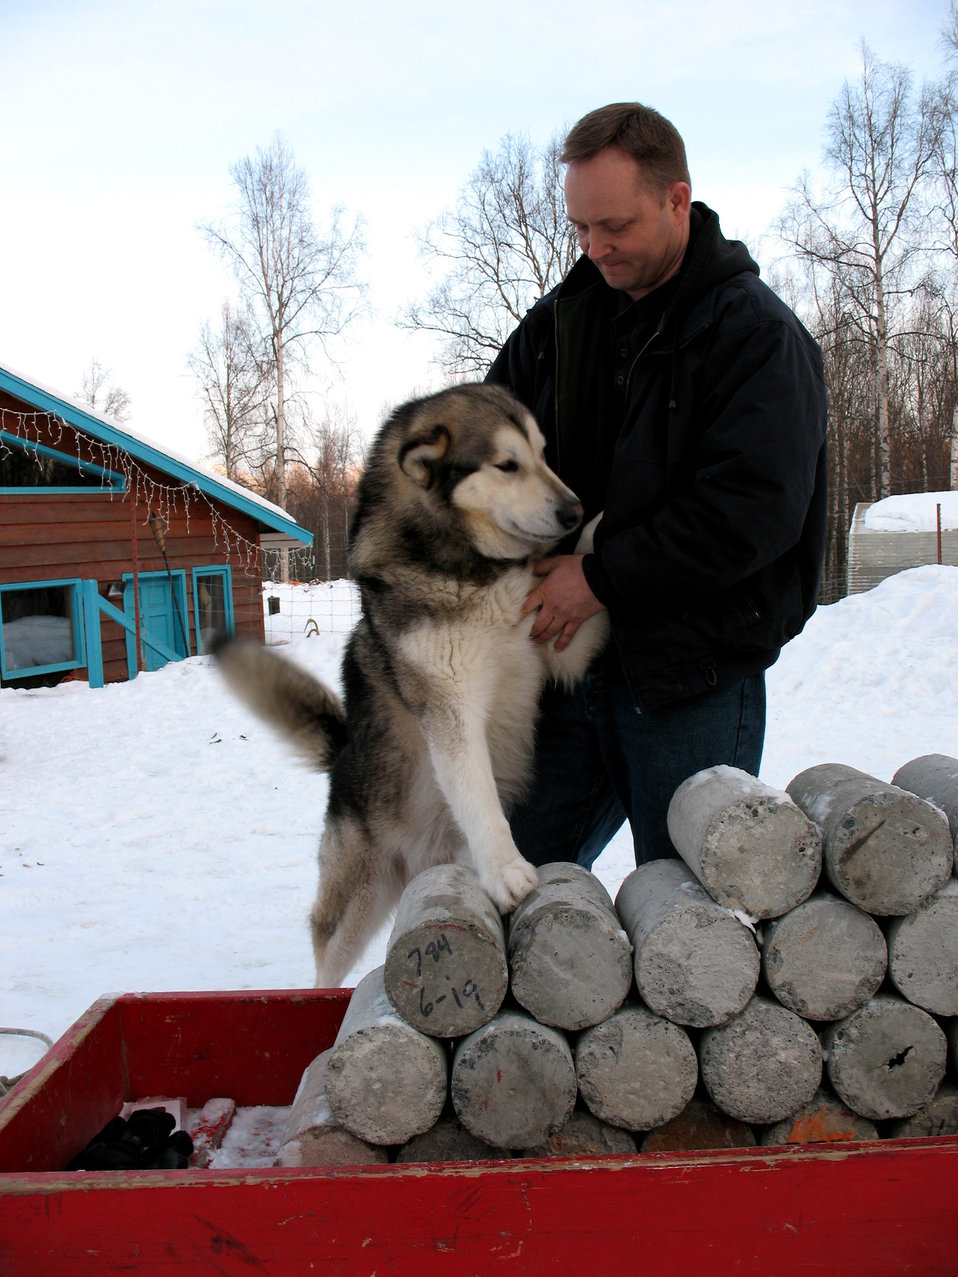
NCO goes to the dogs in competition

Master Sgt. Jeff Nelson pals around with his heavyweight Alaskan Malamute